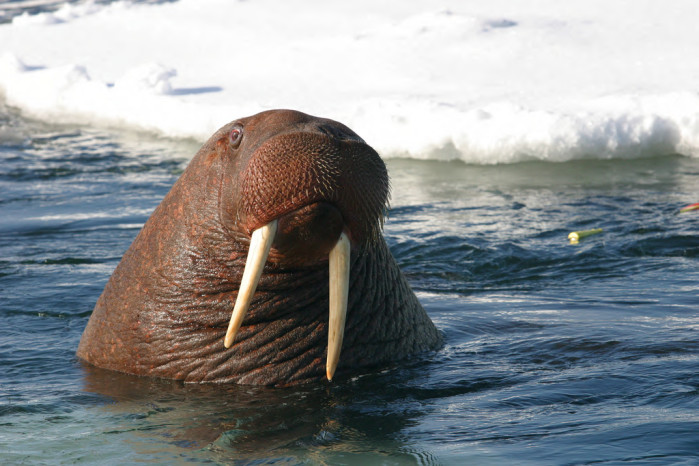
walrus

Young bull walrus, Bering Sea, AK